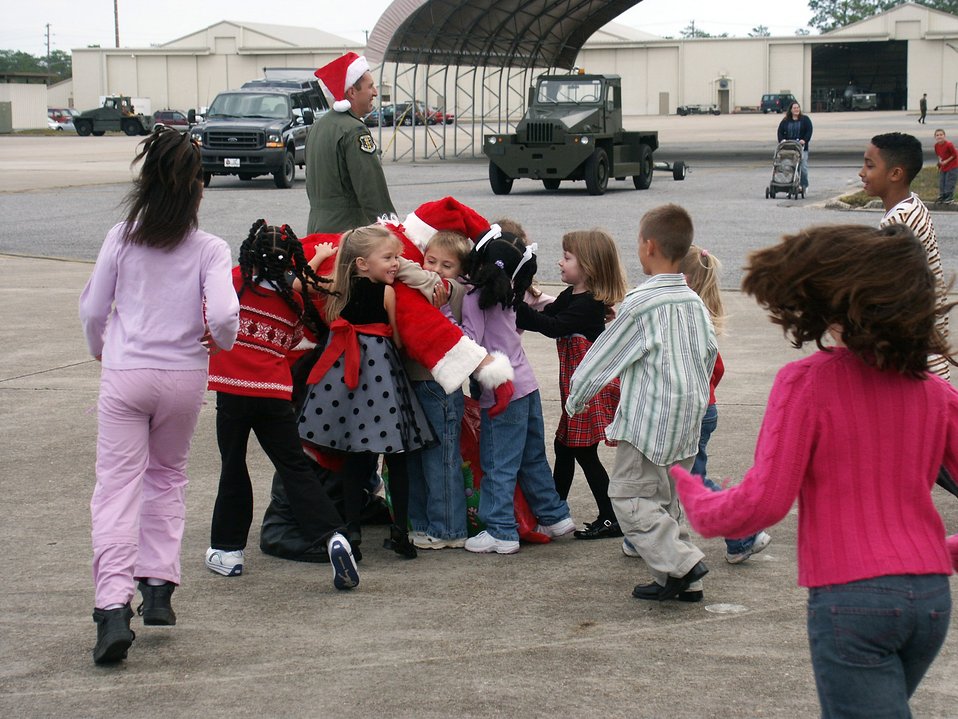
Early visit

EGLIN AIR FORCE BASE, Fla. (AFPN) -- Santa Claus greets children on the flightline here after arriving on an F-15 Eagle. Santa entertained children during the 33rd Fighter Wing's Christmas party.